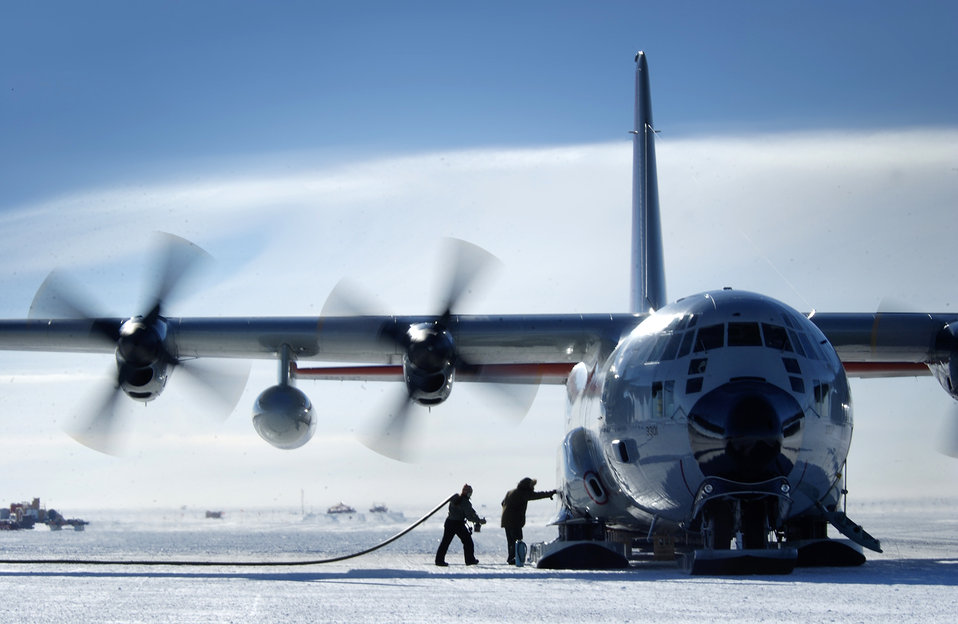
Deep Freeze mission ends record-setting season

A New York Air National Guard LC-130 Hercules sits while crews unload fuel and cargo during a mission to Antartica in 2005. Ski-equipped LC-130s and C-17 Globemaster IIIs redeployed from Christchurch, New Zealand, like the one pictured supported the 2006-2007 season of Operation Deep Freeze which ended in late February. This unique joint and total force mission has supported the National Science Foundation and U.S. Antarctic Program since 1955 and is currently led by Pacific Air Forces, 13th Air Force. The LC-130 is equipped with ski-landing gear that allows the aircraft to land on ice or snow while airlifting supplies to remote locations throughout the Antarctic continent.